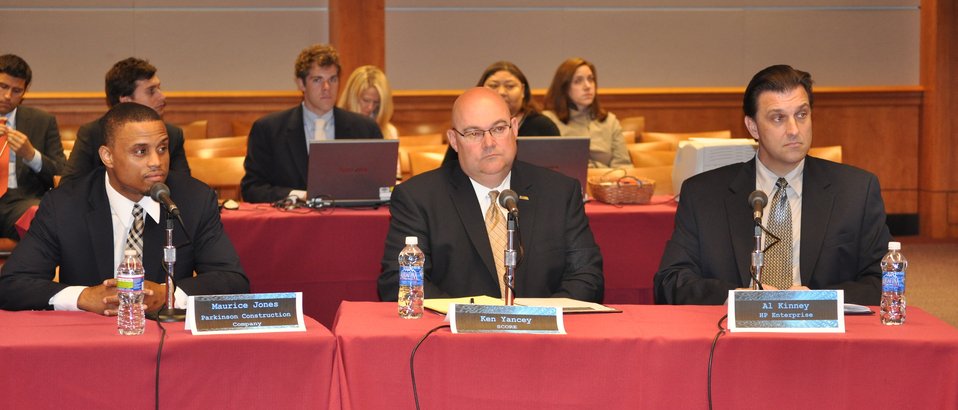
Cybersecurity 5-16

Cybersecurity for Small Business Roundtable; May 16, 2011